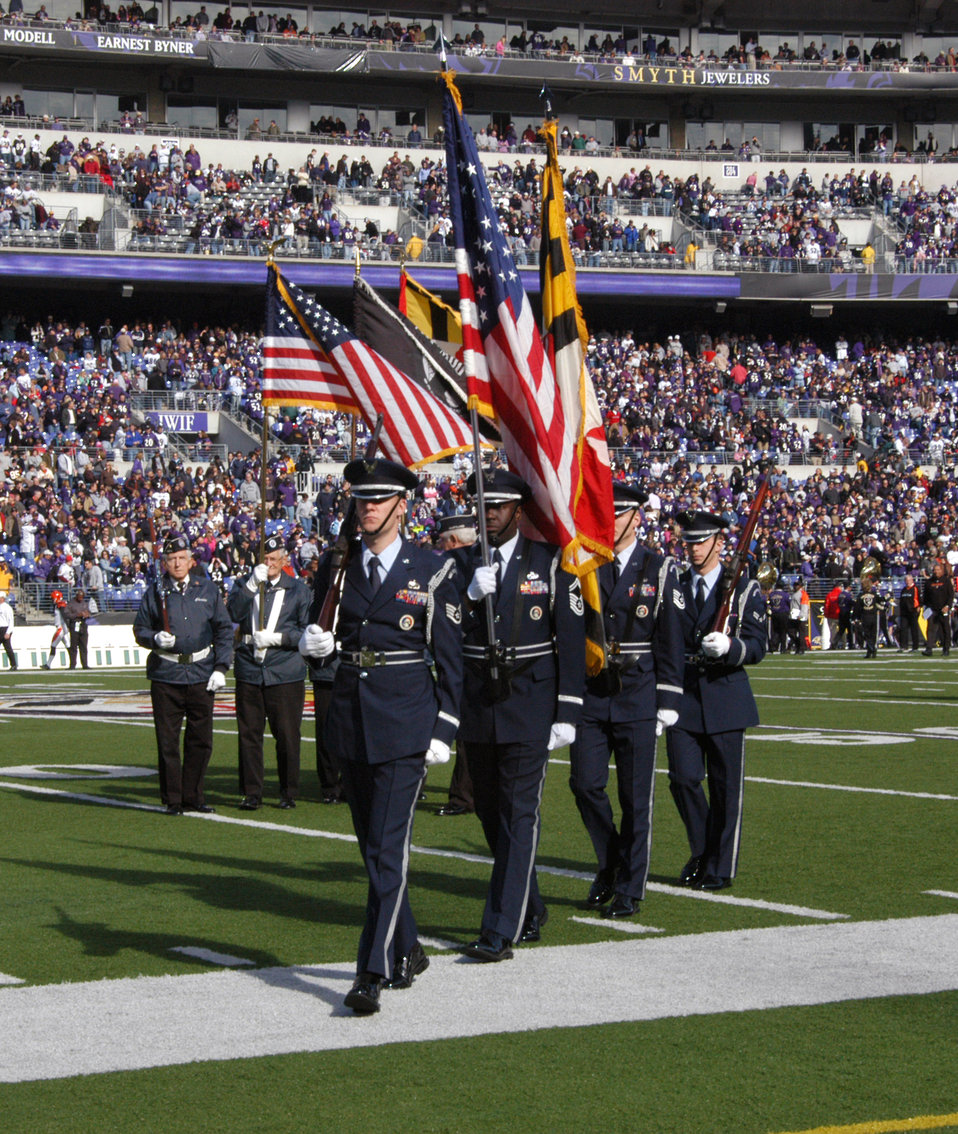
Airmen, Bengals and Ravens ... oh my!

Senior Master Sgt. Mitchell Ross, Tech. Sgt. Aaron Arneson, Staff Sgt. Justin Mealy and Airman First Class Ian Kilbourn depart the Baltimore Ravens field Nov. 5 after presenting the colors as part of the pre-game show in front of a crowd of nearly 71,000 fans. The four Airmen are assigned to the 70th Intelligence Wing at Fort Meade, Md.